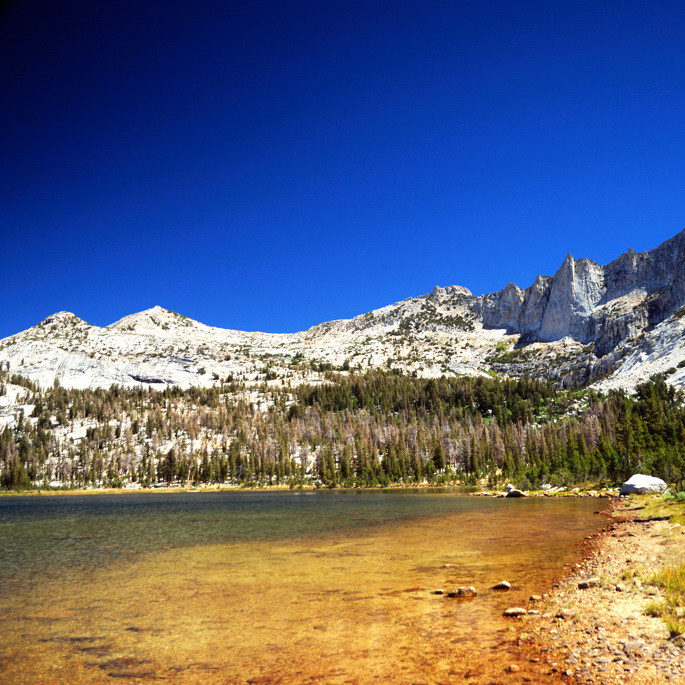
Nelson Lake in Yosemite National Park